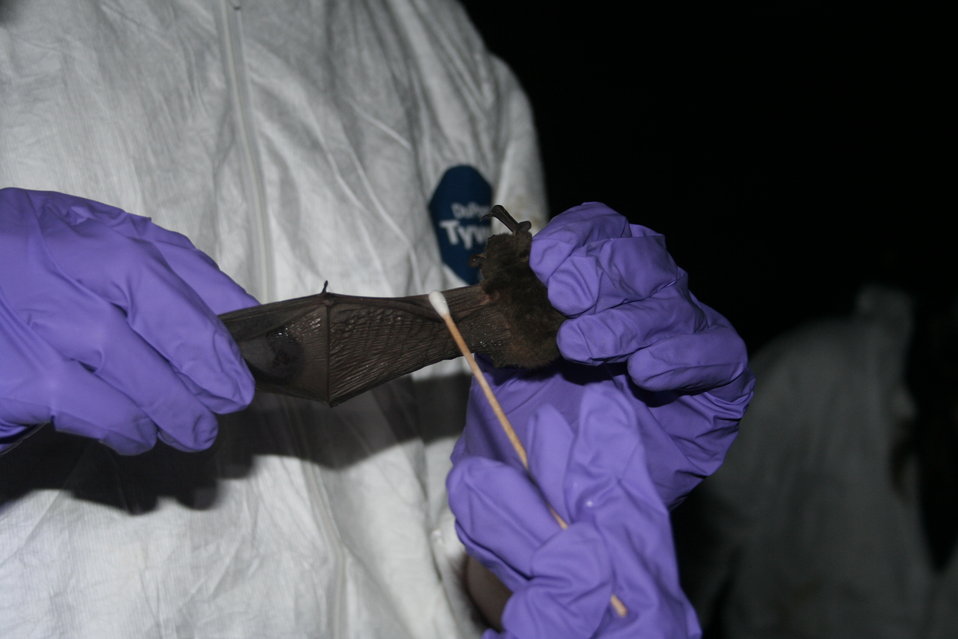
Researchers swabs bat wing to look for WNS fungus